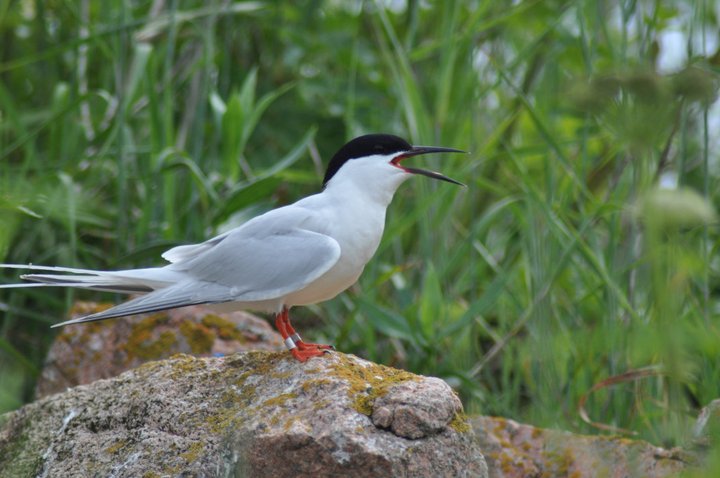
Roseate Tern

A roseate tern at the Nantucket National Wildlife Refuge, MA.